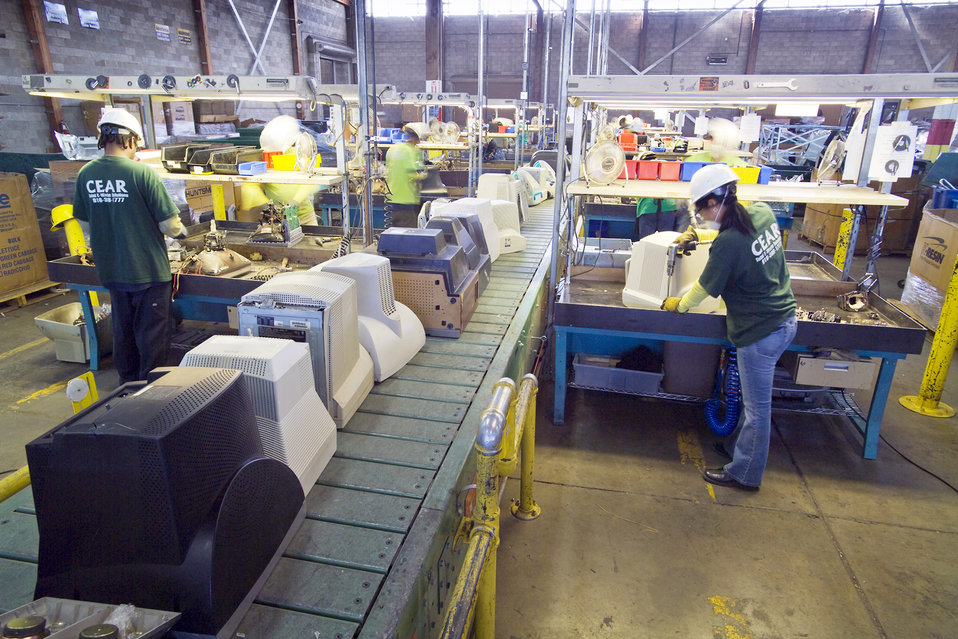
Green businesses

Employees at California Electronic Asset Recovery at the former Mather Air Force Base in Sacramento, Calif., dismantle monitors. CEAR workers recycled more than 15 million pounds of e-waste last year.